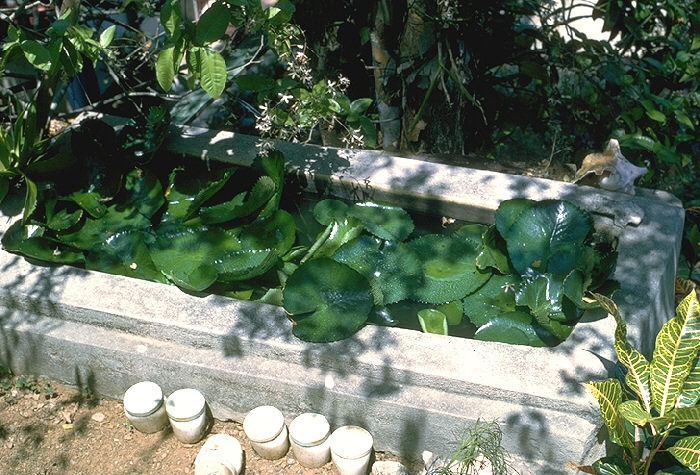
Lily pond, potential mosquito breeding site. Virgin Islands.